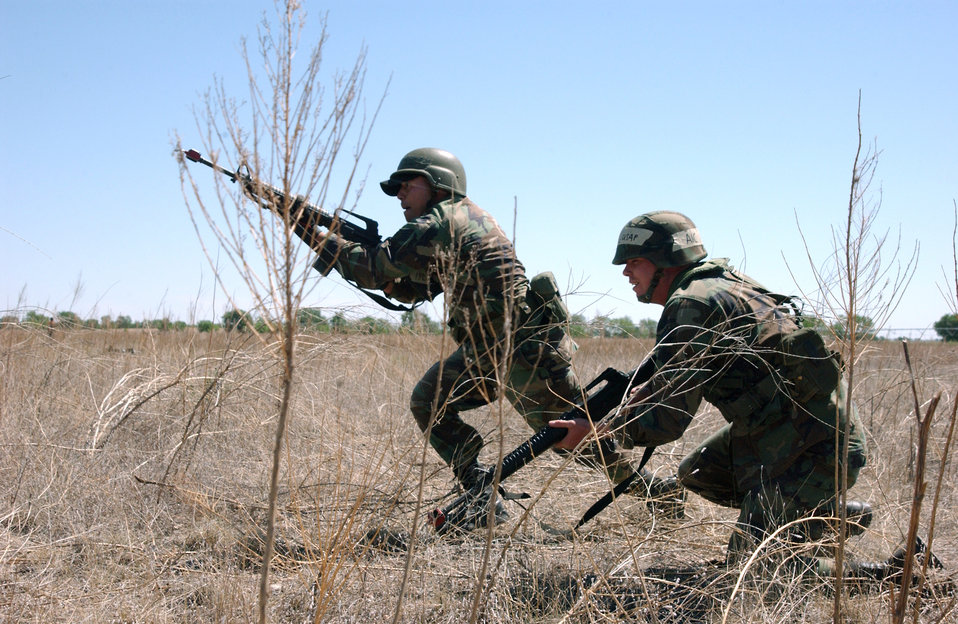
Expeditionary Combat Skills Training

Airmen with the 27th Fighter Wing practice charging and taking cover during an Expeditionary Combat Skills Training session held June 16 to 17 at Cannon Air Force Base, N.M.